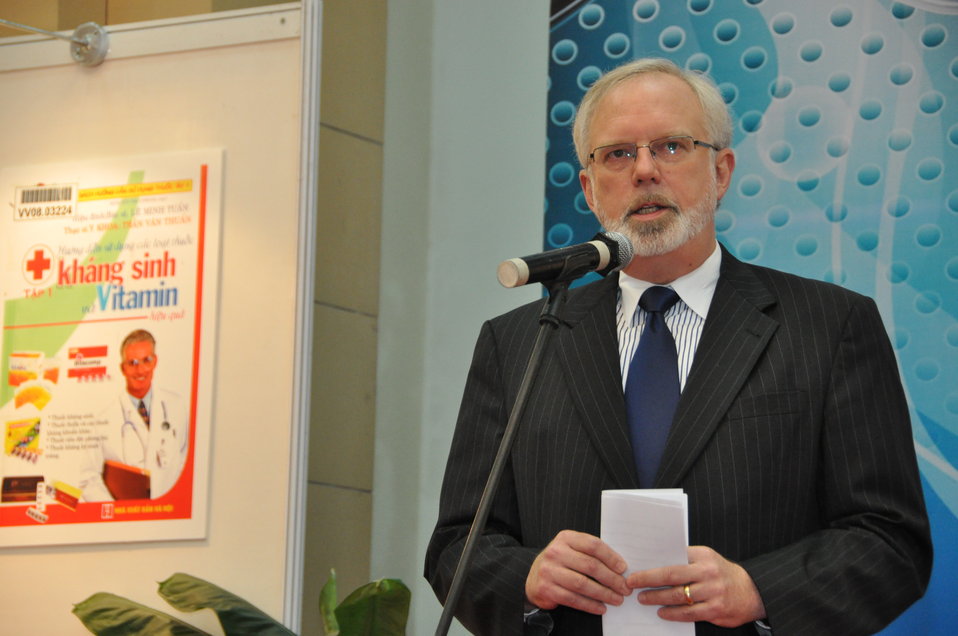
U.S. Ambassador David Shear opens safe medicine exhibition in Hanoi

Safe Medicine Exhibition